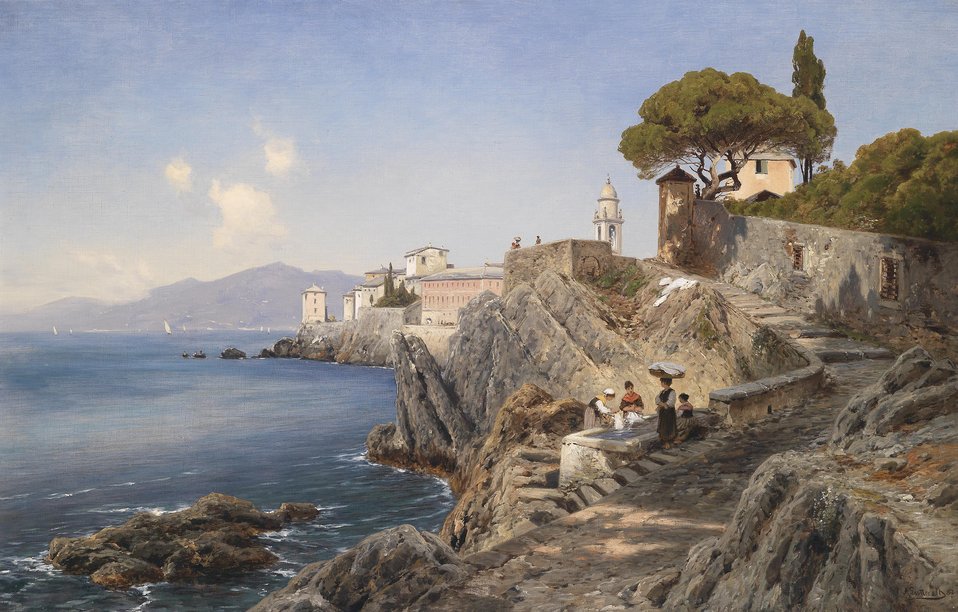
Deutsch: Am Ufer vor Sturla bei Genua, signiert, datiert A. Lutteroth(18)87, Öl auf Leinwand, 65 x 100 cm